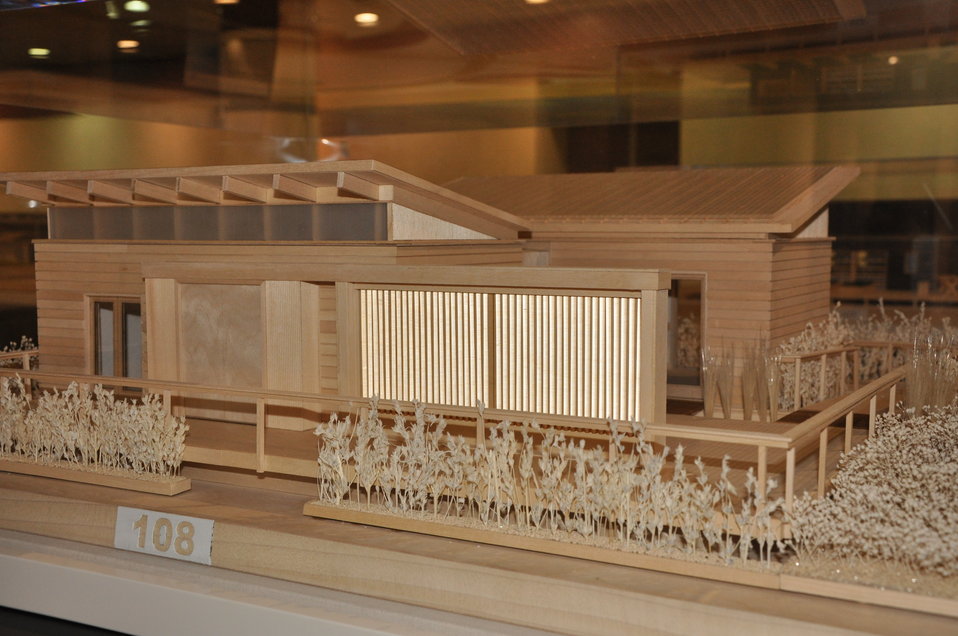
University of Maryland